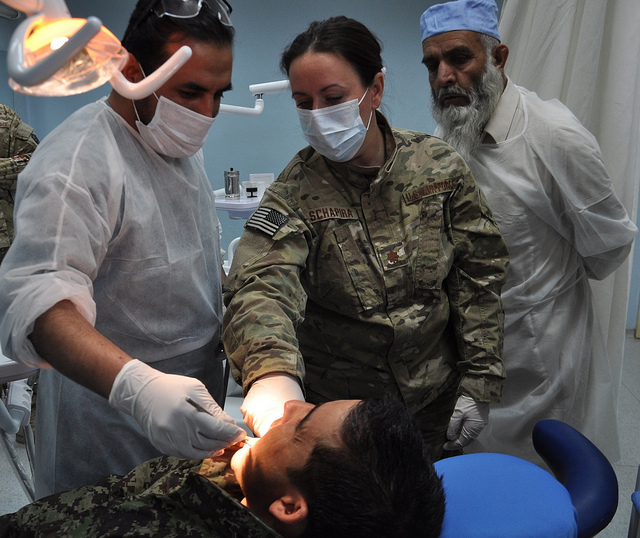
Maj. Courtney Schapira helps Jant, a Paktia Regional Military Hospital dentist, with a patient Dec. 1, 2011, at Gardez Fire Base, Afghanistan. Schapira is the first medical embedded training team dental adviser for the dental clinic.